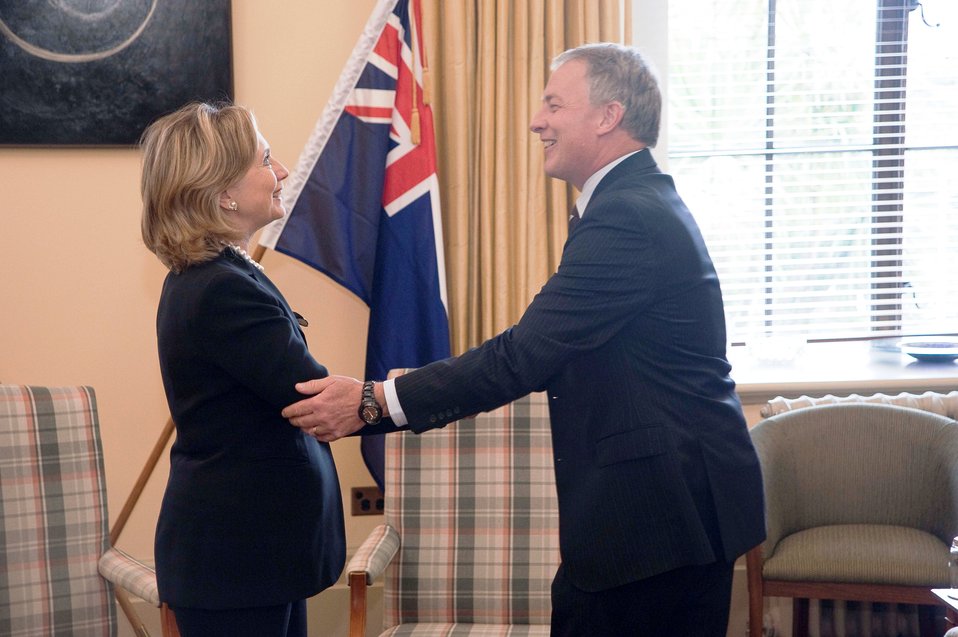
Secretary Clinton Shakes Hands With New Zealand Opposition Leader Goff

U.S. Secretary of State Hillary Rodham Clinton shakes hands with New Zealand Opposition Leader Philip Goff in Wellington, New Zealand, on November 4, 2010.